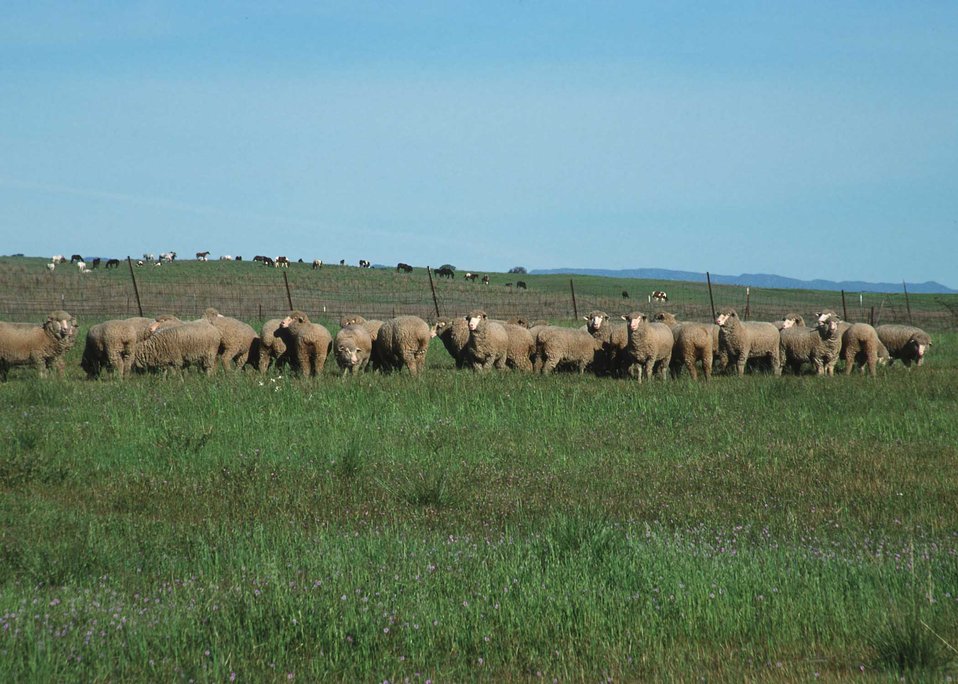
Sheep grazing in a field in Yolo County, California.